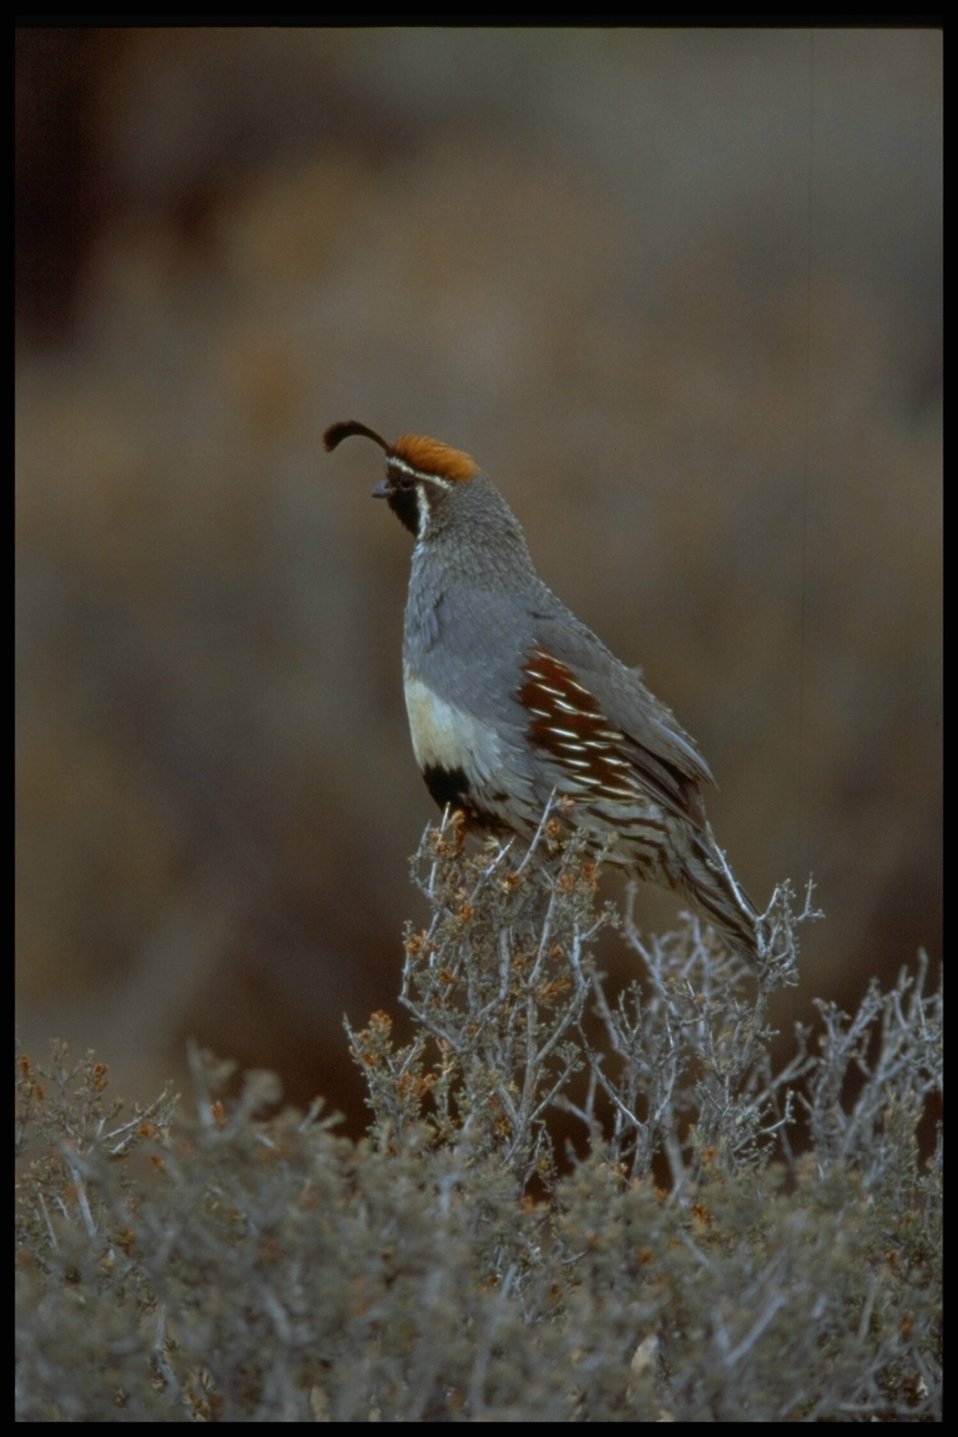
Quail on watch! He is sitting on a bush found at the Parashant National Monument.